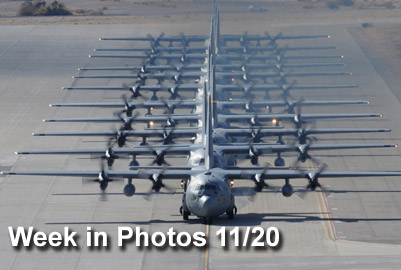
Week in Photos

Air Force Week in Photos for Nov. 20 highlights photos from around the Air Force. In this photo by Airman 1st Class Stephanie Rubi, a line of C-130 Hercules taxi during a Mobility Air Forces Exercise on Nov. 18, 2009, at Nellis Air Force Base, Nev.